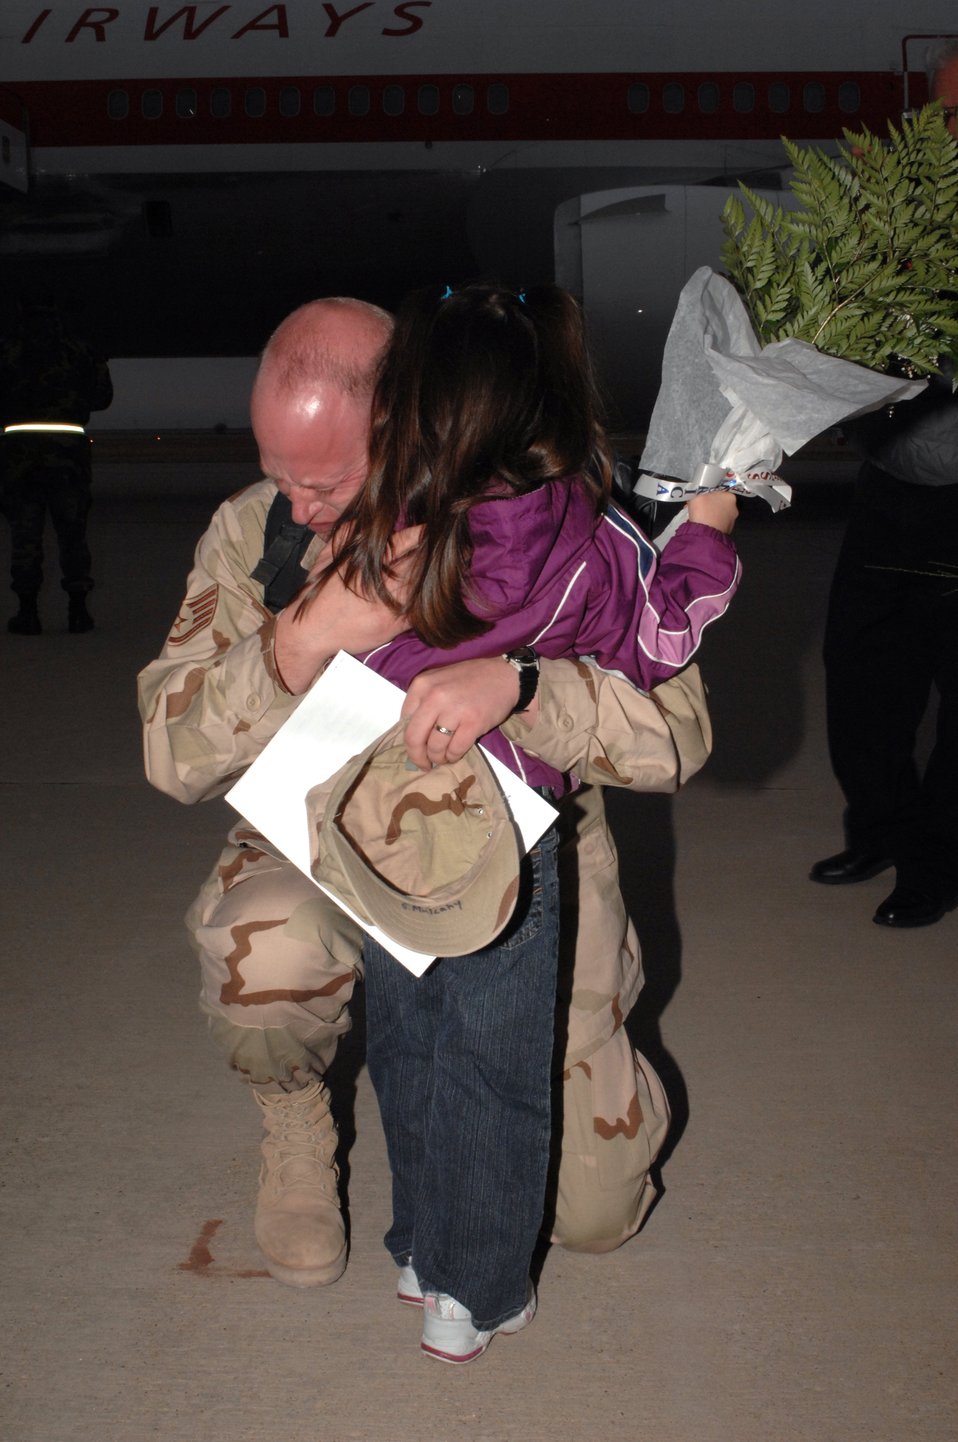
Welcome home

Staff Sgt. Sean Mulcahy embraces his daughter, Sabrina, after returning home from a deployment in Iraq Jan. 18 at Cannon Air Force Base, N.M. Sergeant Mulcahy and other Airmen from Cannon AFB returned to a crowd of family and friends. He is assigned to the 27th Aircraft Maintenance Squadron.